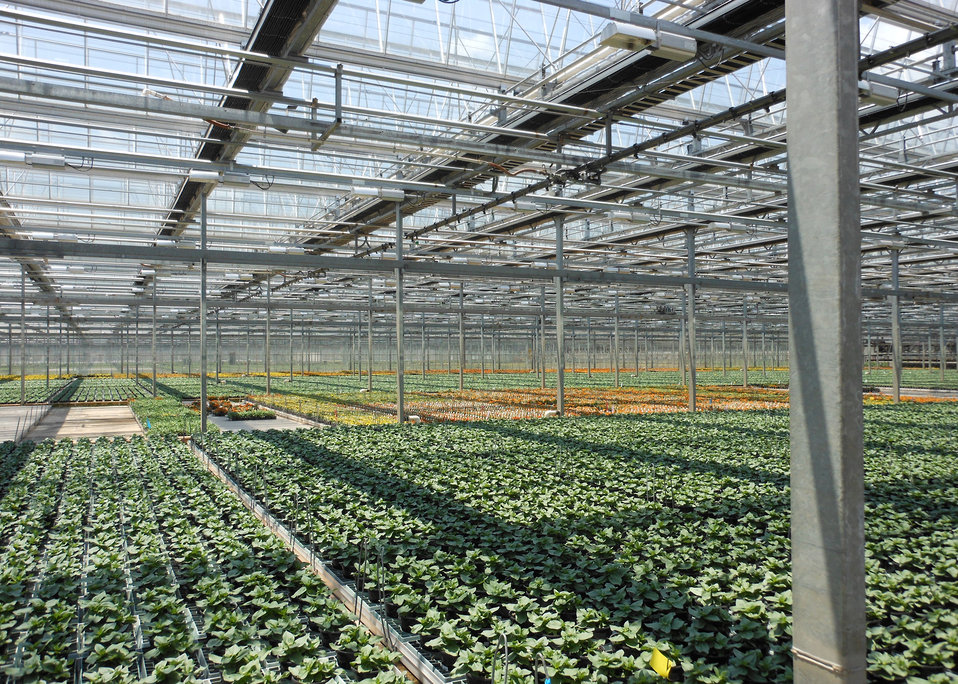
Seedlings and flowering plants grow at Metrolina Greenhouses Metrolina in Huntersville, NC on Monday, June 25, 2012. Metrolina Greenhouses is a family-owned, wholesale plant and services company that started business in April 1972. It is the largest single-site heated greenhouse in the US at 162 acres under roof and approximately 30 acres of outdoor growing space. Metrolina Greenhouses is one of the most automated greenhouses in the U.S. and has many internally designed machines from automatic plant transplanters to mechanical shipping belts. The Metrolina greenhouses operation has drastically cut its energy bills by replacing a natural gas heating system with a wood boiler, funded in part with U.S. Department of Agriculture’s (USDA) Rural Energy for America Program (REAP). The wood chips used to fuel the Vyncke boiler also provide an additional market for local lumber mills and logging operations. Metrolina produced 187 billion BTUs from the biomass boilers between October 1, 2011 and May 30, 2012.